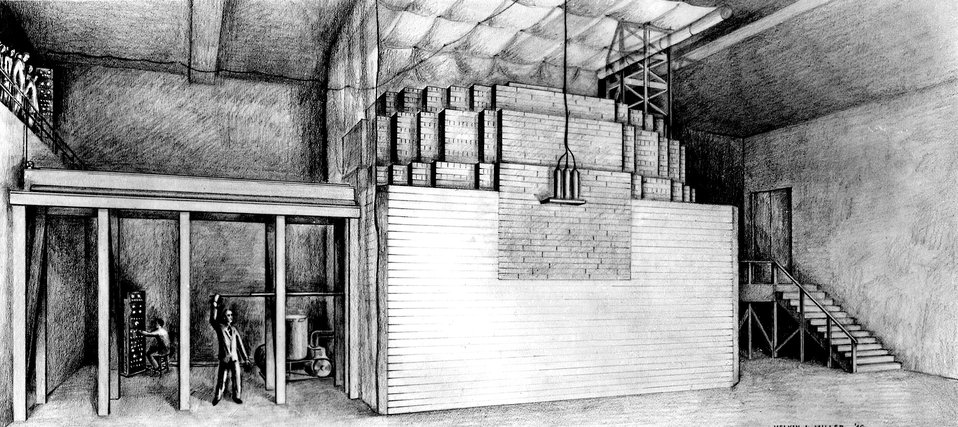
Sketch of the world's first nuclear reactor, Chicago Pile 1 or CP-1, which was constructed under the football grandstands at the University of Chicago.